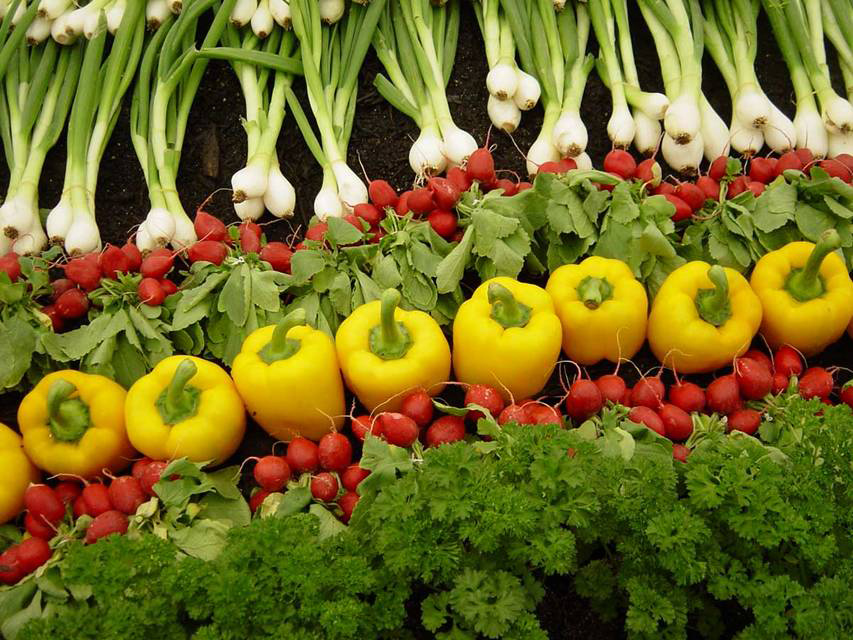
What Happens To Your Food Waste?

Food waste is the one of the least recovered materials in the municipal solid waste stream and is one of the most important materials to divert from landfills because it contributes to climate change.